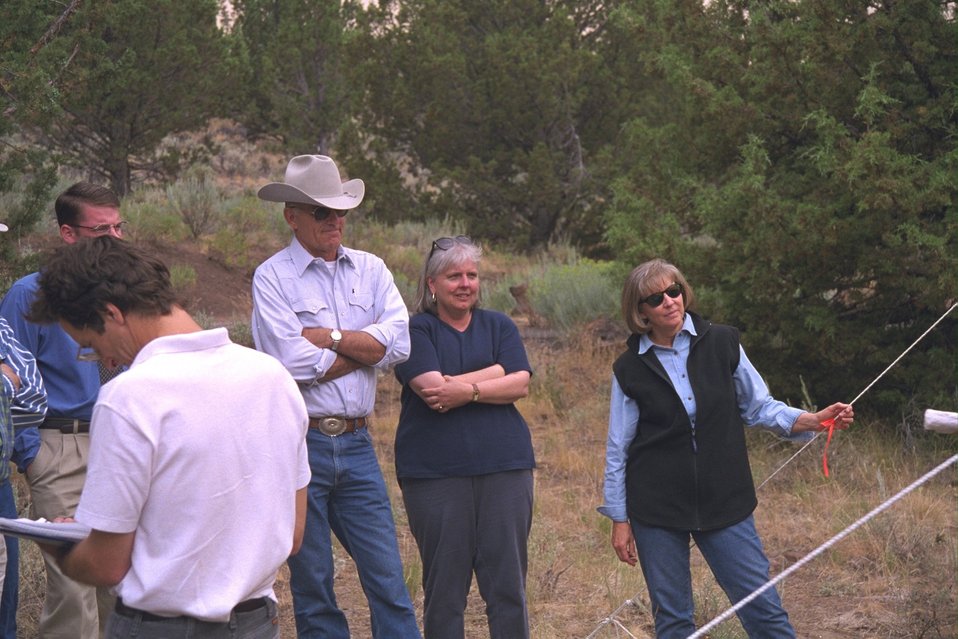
Facing camera: Doc Hatfield, from Brothers, OR, and the OR/WA State Director Elaine Zielinski, and Connie Hatfield at the Steens designation discussion.